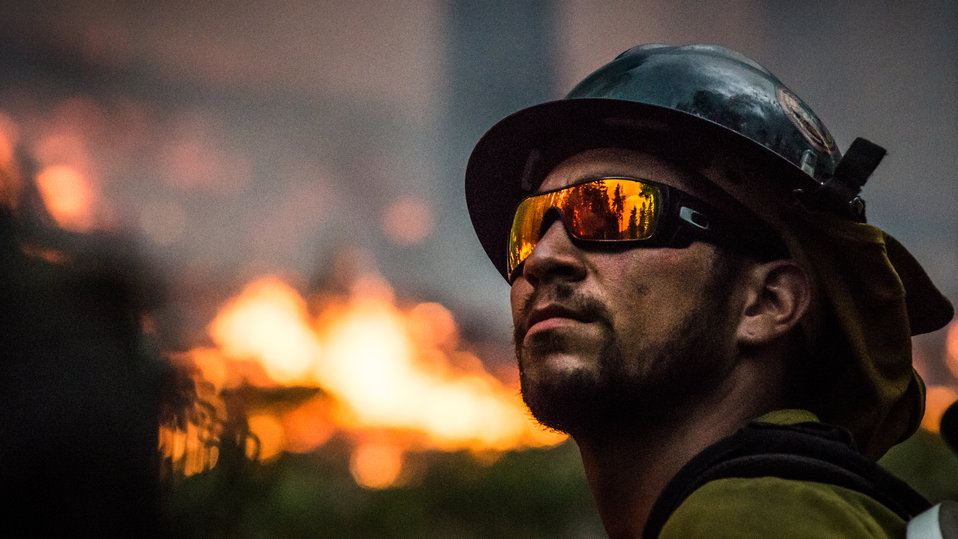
A member of the Geronimo Interagency Hotshot Crew, Department of the Interior (DOI) Indian Affairs (IA) Bureau of Indian Affairs (BIA) San Carlos Agency in Arizona; on assignment at the Big Windy Complex Wildlands Fire, approximately 15 miles west of Interstate-5 and East Northeast of Galice, Oregon, conducts a prescribed burn 'burnout' operation to help stop the main fire that may head toward this roadway, on Friday, Aug 9, 2013. The primary mission of the Interagency Hotshot Crews (IHC) is to provide a safe, organized, mobile and highly skilled hand crew for all phases of wildland fire suppression. The arduous duties and specialized assignments required of IHC personnel require uniform staffing, certification, training, equipment, communications, transportation, organization, and qualifications that adhere to interagency standards and guidelines.